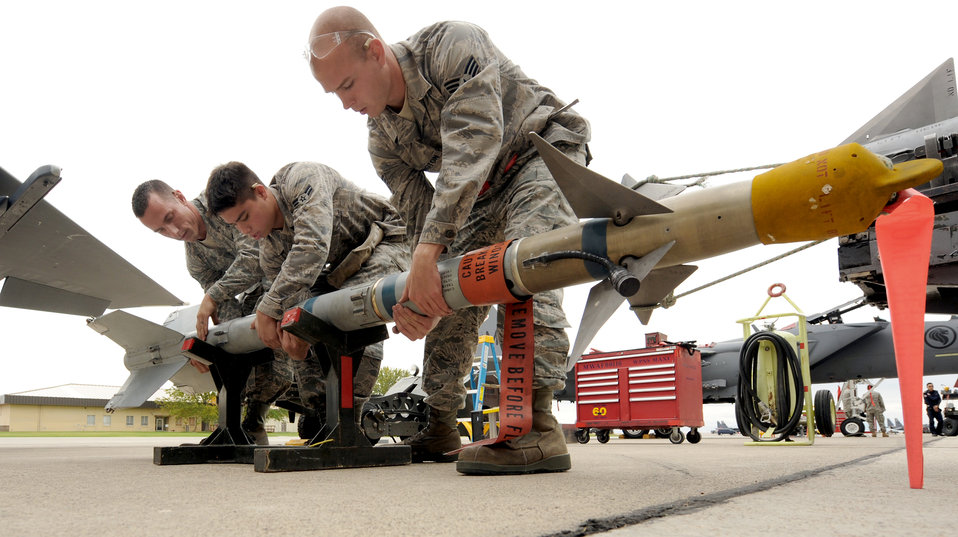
All together now

Staff Sgt. Kevin Sitko (left to right), Airman 1st Class Jeffrey Brockman and Senior Airman Derek Pennington prepare an AIM-9 missile before a base weapons load crew competition at Mountain Home Air Force Base, Idaho, Oct. 8, 2010. The Airmen are weapons load crew members with the 389th Fighter Squadron.